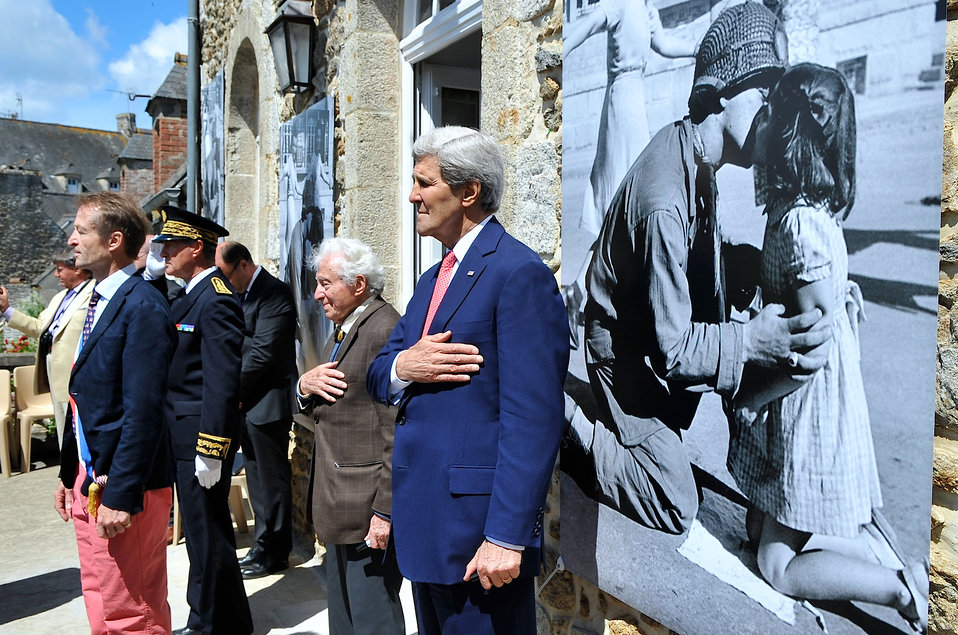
Secretary Kerry, Photographer Vaccaro Pause For National Anthems in Saint Briac

U.S. Secretary of State John Kerry, Mayor Vincent Denby-Wilkes, and World War II photographer Tony Vaccaro pause to listen to the French and American national anthems during a ceremony to rename the town square of Saint Briac, France, in honor of Vaccaro on June 7, 2014. The ceremony also commemorated the 70th anniversary of D-Day and the endurance of the U.S.-French alliance.